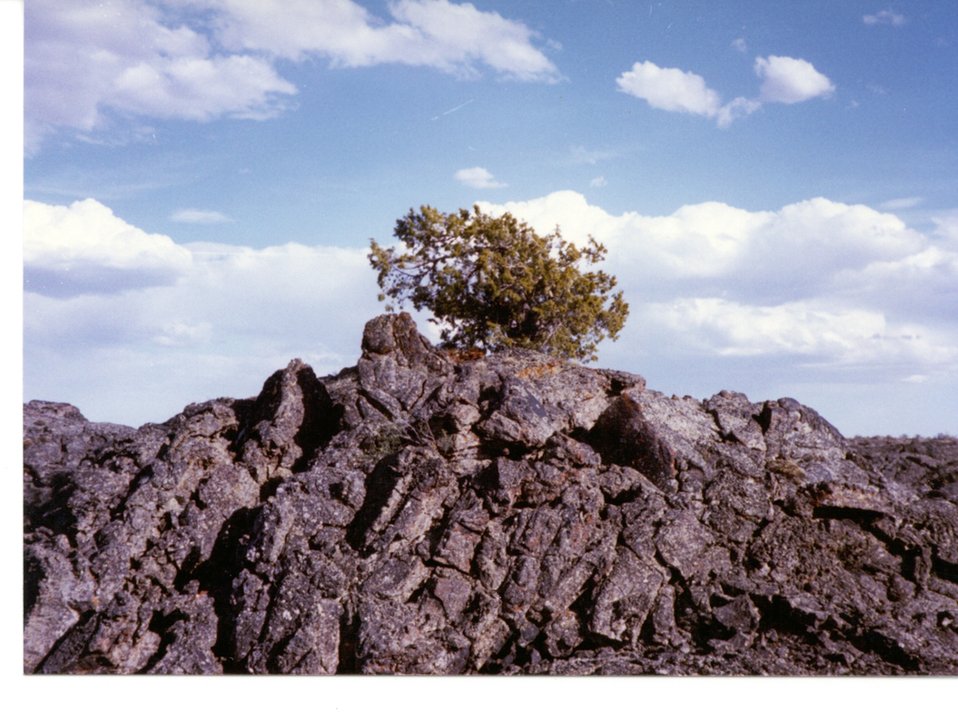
Juniper on lava in Wapi Flow west of Pillar Butte Craters of the Moon Shoshone Field Office USRD Upper Snake River District